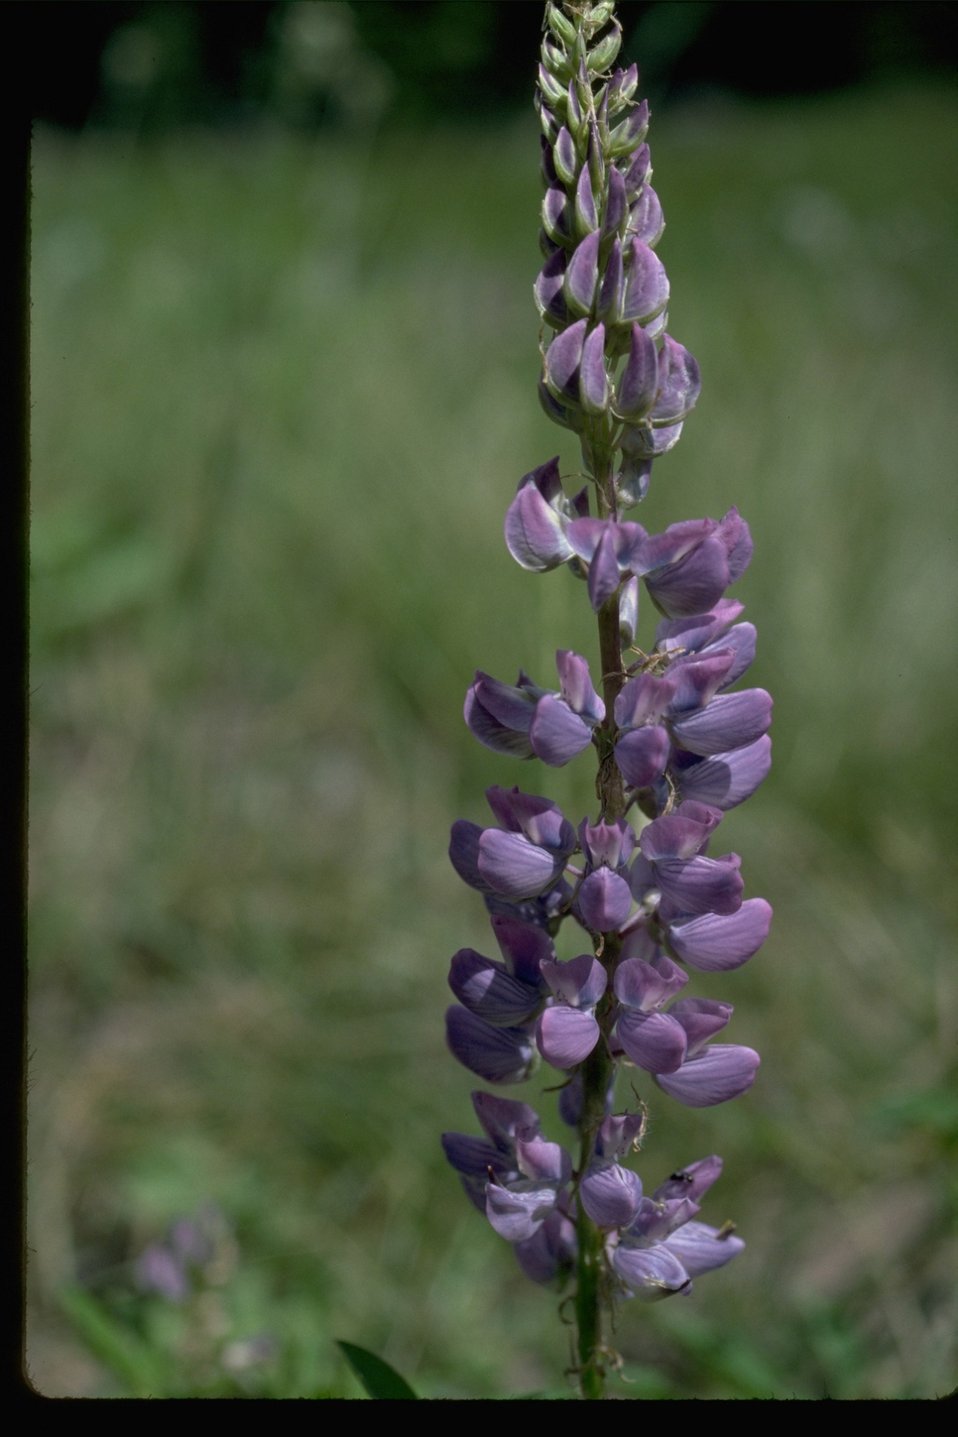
Lupinus Polyphyllus